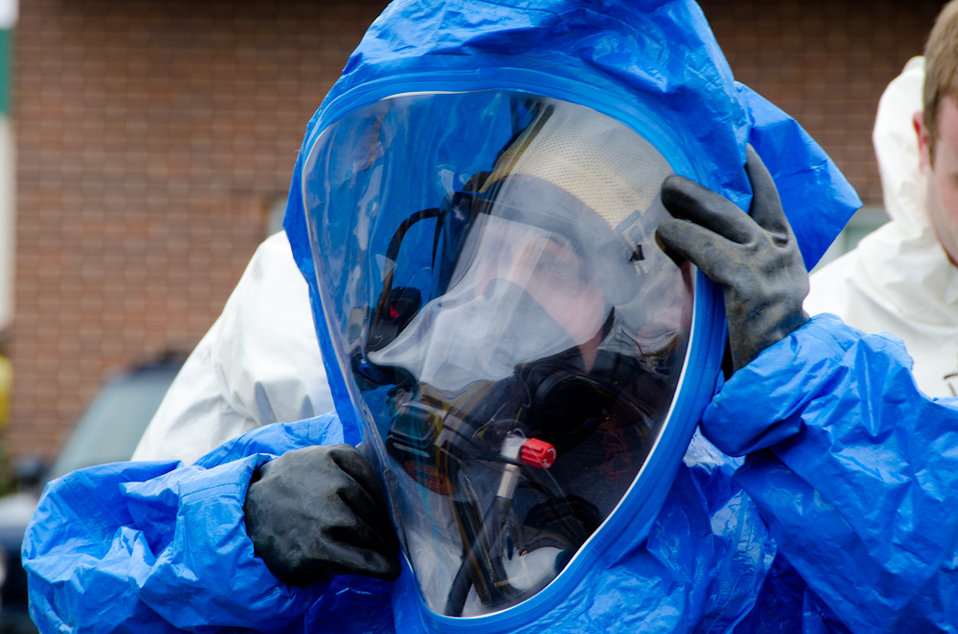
October 25, 2011 Practicing Protection

U.S. EPA Region 7 On Scene Coordinators (OSCs) participated in an annual exercise using fully encapsulated protective equipment in Kansas City, Mo.

The coordinators’ primary mission is to protect human health and the environment when they are called in to evaluate and clean up after an incident has occurred involving chemical, biological or other toxic agents. In this photo one participant awaits a practice decontamination.